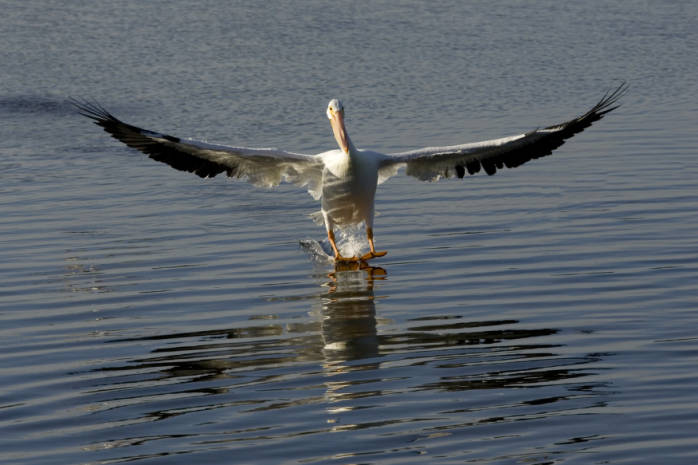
white pelican

J.N. Ding Darling National Wiildlife Refuge, FL